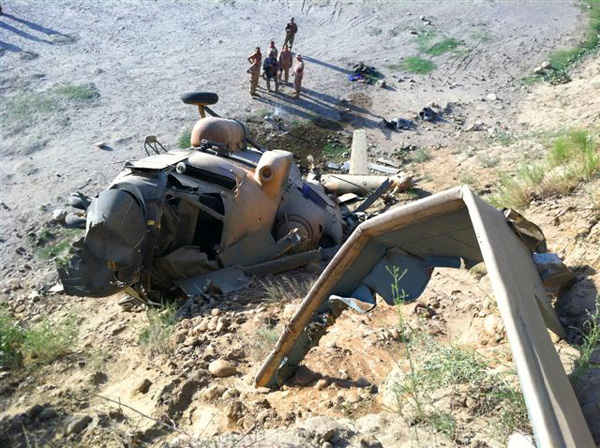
AAF Mi 17 crash

Afghan National Army medical personnel, U.S. Soldiers and 438th Air Expeditionary Wing Airmen arrived at the site of an Afghan Air Force Mi-17 helicopter crash in Kunar province Afghanistan. Upon arrival, teams assessed security, treated injuries and began the process of recovering the aircraft. An AAF safety investigation board has been conveyed to determine the cause of the crash.